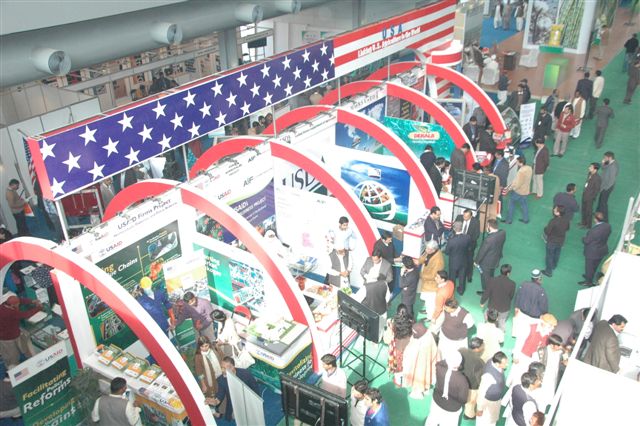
DSC 0174 (2)